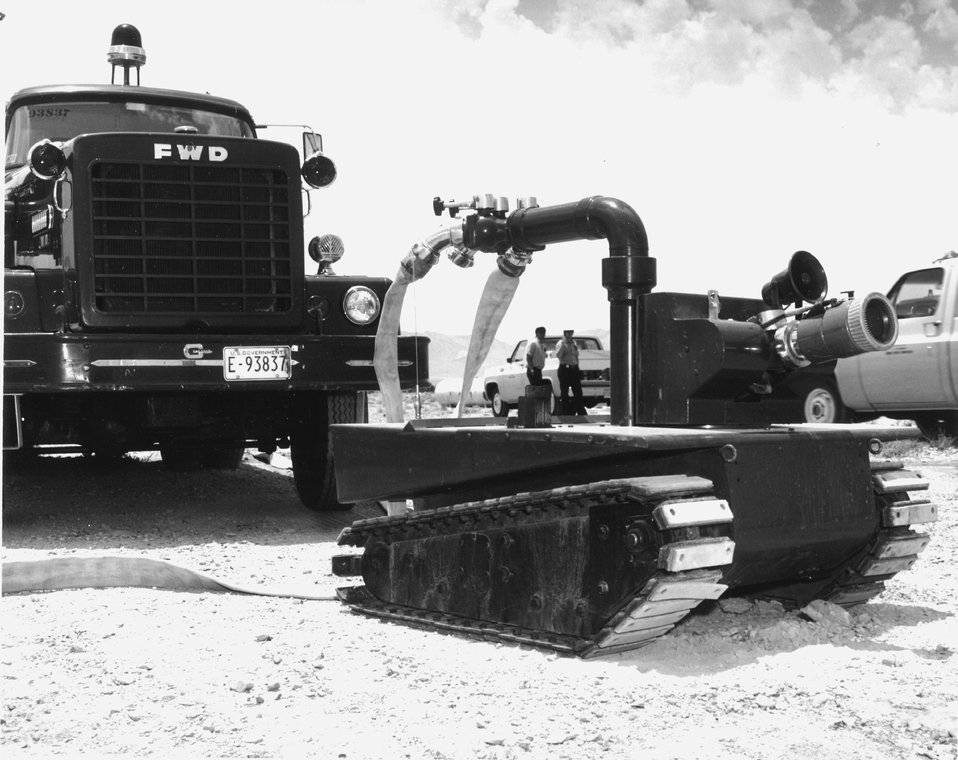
The Firecat responds immediately to remote-tone coded signal instructions sent from a hazard-safe location. c. undated